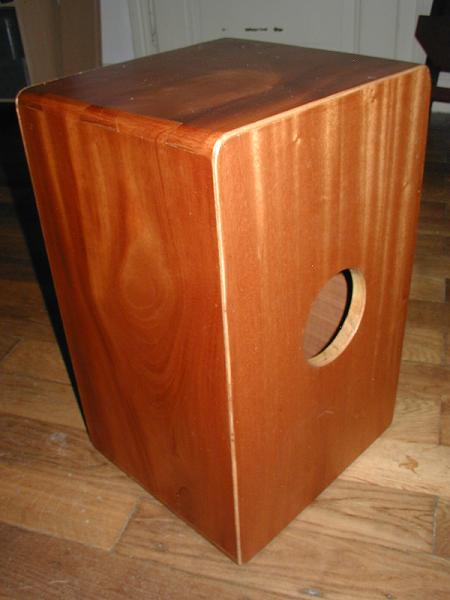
Fran√ßais†: Cajon vu de derri√®re